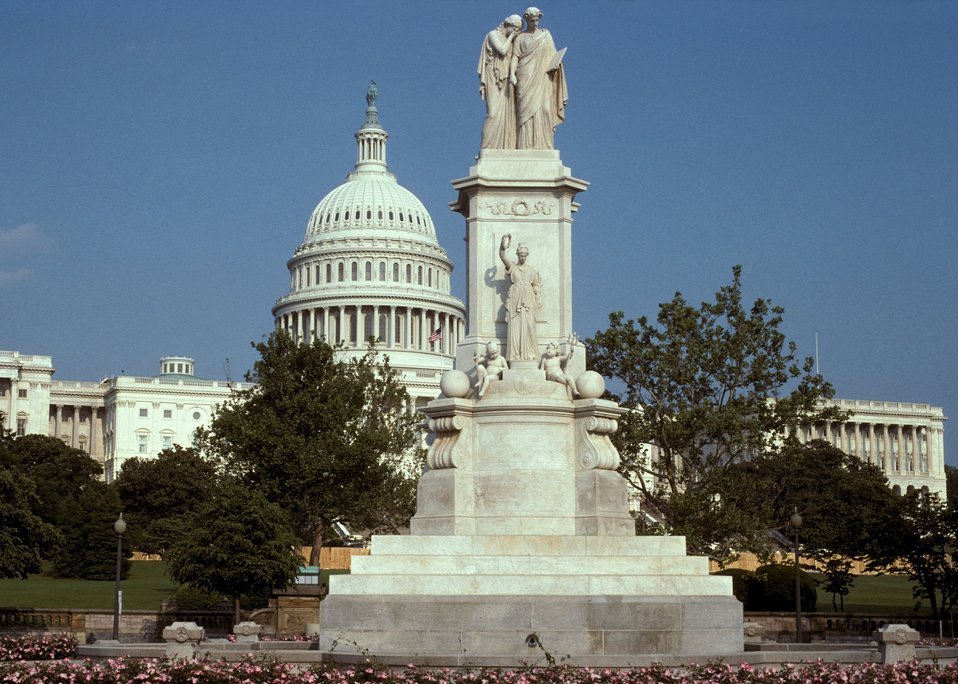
View of U. S. Capitol building in Washinton DC.